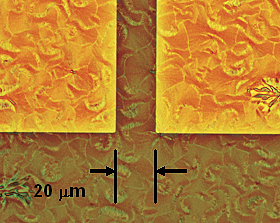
FET structures; optical micrographs

Optical micrographs of typical FET structures in the NIST/Penn State/UK experiments show the effect of pretreating contacts to promote organic crystal formation.